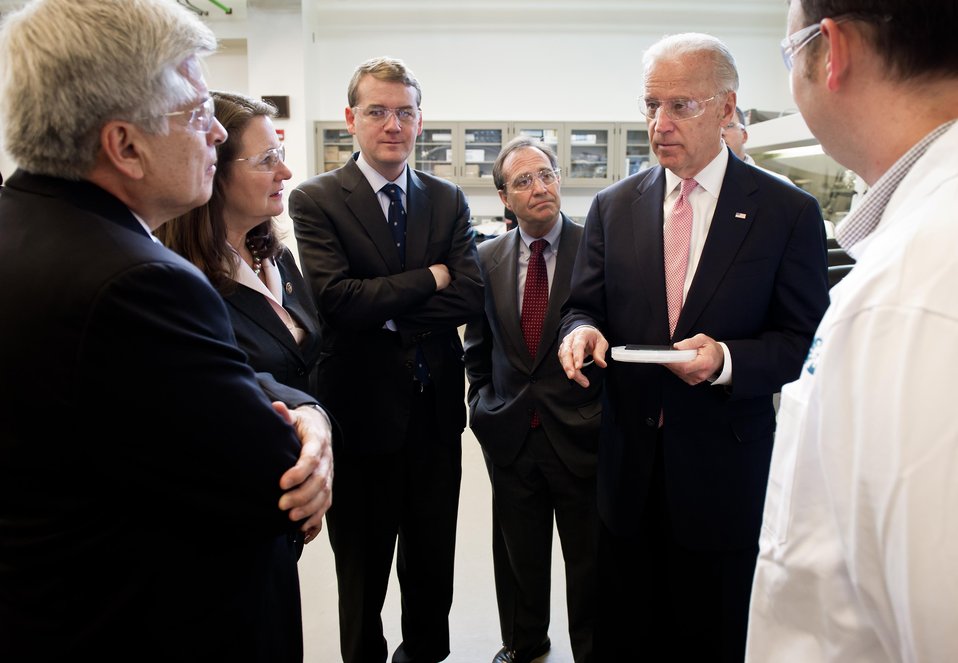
VICE PRESIDENT JOE BIDEN TAKES TOUR OF THE PROCESS DEVELOPMENT AND INTEGRATION LABORATORY AT NATIONAL RENEWABLE ENERGY LABORATORY ON MAY 20,2011.